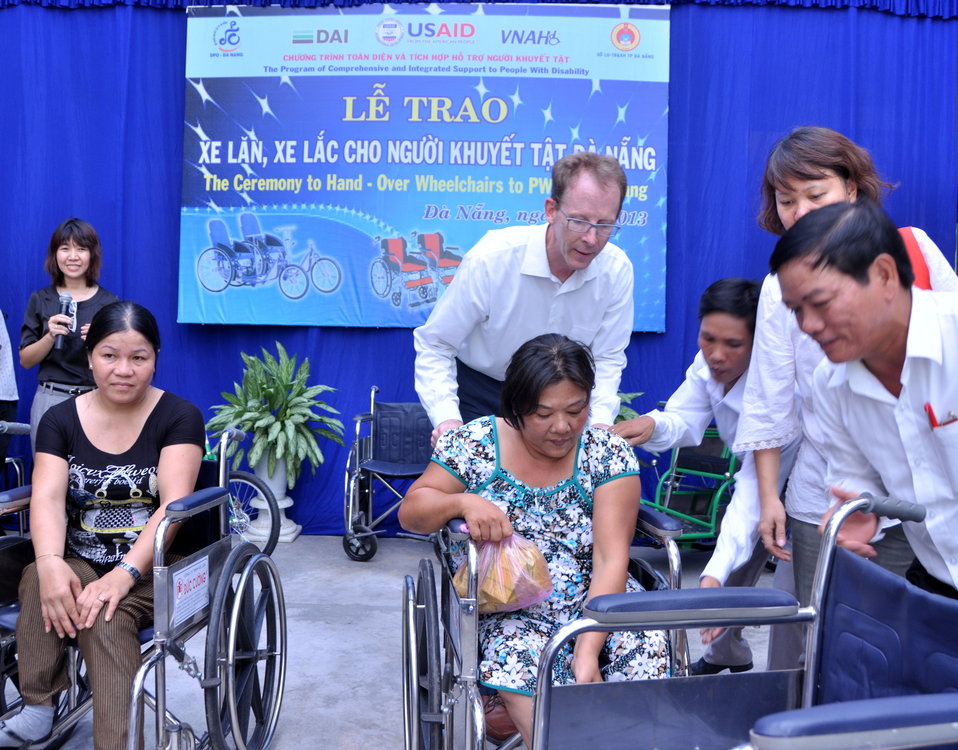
USAID Project Supports Rehabilitation Department for Children and Wheelchair Distribution in Danang

Beneficiaries in Danang, Vietnam, receive wheelchairs.